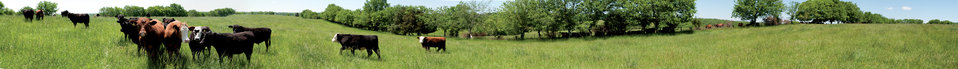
[Download for best viewing] (Virtual panorama) Some of the 65 cattle and 30 calves that are born, raised and roam the pastures of Brookview Farm Manakin-Sabot, VA, eating grass or resting under shade trees on Thursday, May 5, 2011 in one of many farms participating with Fall Line Farms a local food cooperative in the Richmond, VA area that offers a wide variety of household food staples and specialty items on an ever changing inventory of fruits, vegetables, meats, soaps, eggs, cheeses, flowers, honey, pastas, sauces, syrups, baked goods, mushrooms, flour and grains. Suppliers post what they have on a Lulus Local Food online listing and can make their selection. Every Thursday suppliers deliver orders to, one of several pick-up points, designated by the customers in or around the Richmond area.